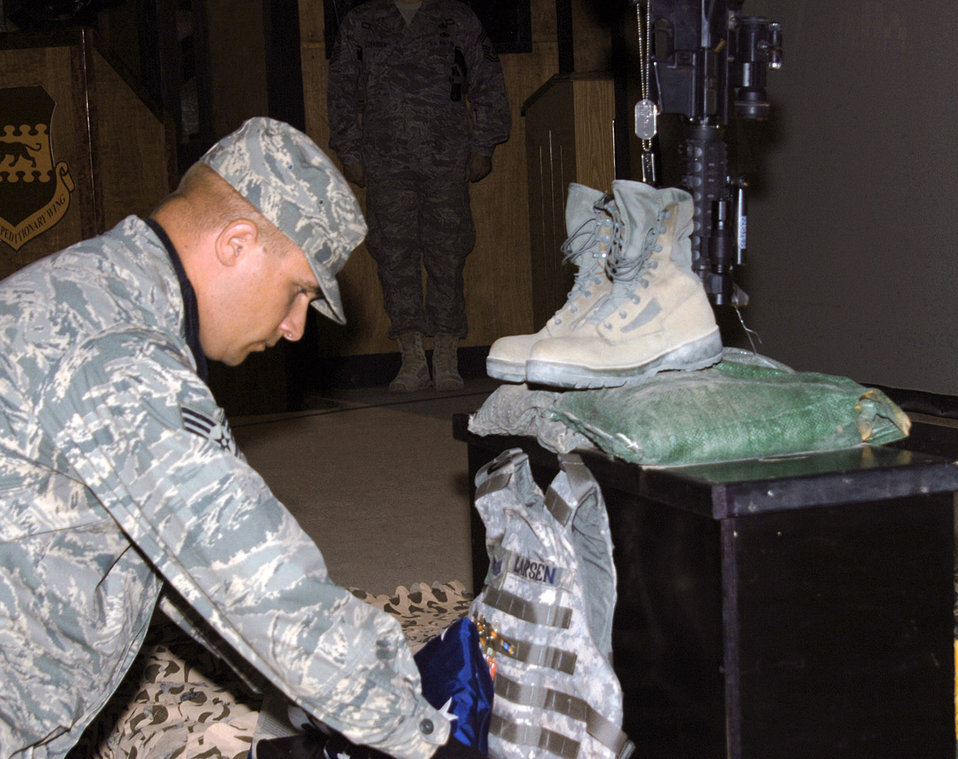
Servicemembers mourn loss of one of their own

Staff Sgt. Jerred Mitchell presents a ceremonial flag at a memorial service for Tech. Sgt. Jackie Larsen in the Joint Base Balad Town Hall July 20 in Iraq. Sergeant Larson, who died from non-combat related causes July 17, was a paralegal working with the Law and Order Task Force of the 732nd Expeditionary Support Squadron. Her duties placed her at Forward Operating Base Shield where she served as the NCO in charge of all personnel movements for the LAOTF. She was deployed from Beale Air Force Base, Calif. and her hometown was Tacoma, Wash. Sergeant Mitchell is a Joint Base Balad Honor Guard member.